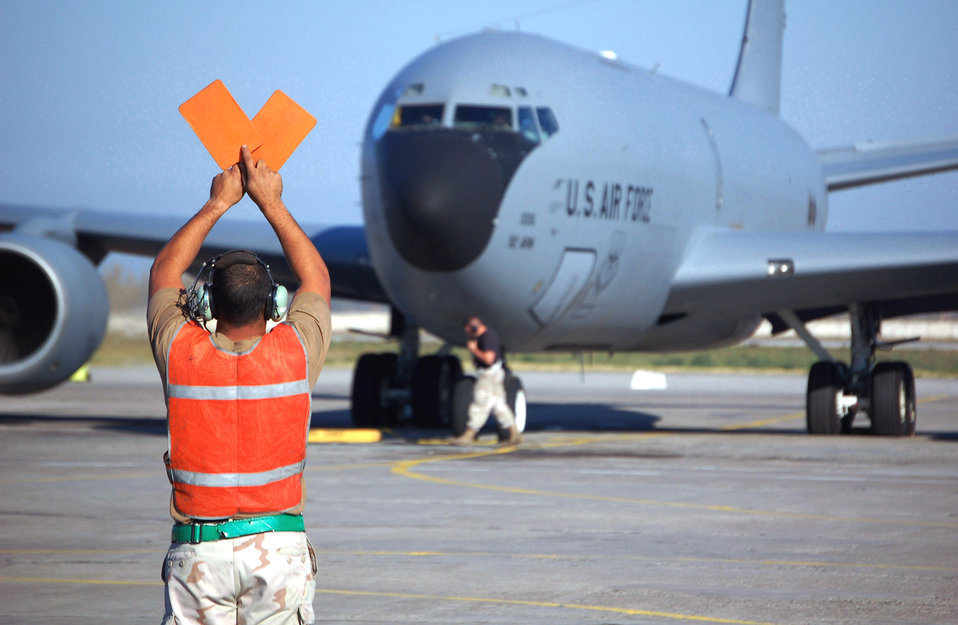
Maintenance unit moves fuel on time

Senior Airman Joe Boullt signals a KC-135 Stratotanker crew to hold in place prior to marshalling the aircraft for takeoff. Airman Boullt is a KC-135 crew chief deployed from the 92nd Aircraft Maintenance Squadron, Fairchild Air Force Base, Wash.